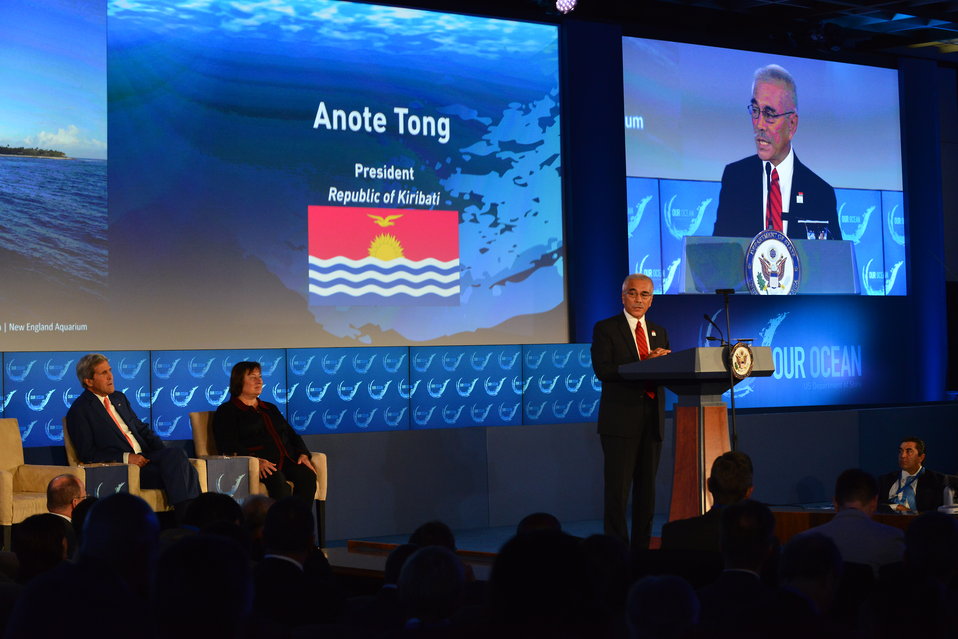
Secretary Kerry attends the Opening Session of the 'Our Ocean' Conference

U.S. Secretary of State John Kerry listens to President Anote Tong as he delivers remarks at the opening session of the 2014 'Our Ocean' conference at the U.S. Department of State in Washington, D.C. on June 16, 2014.